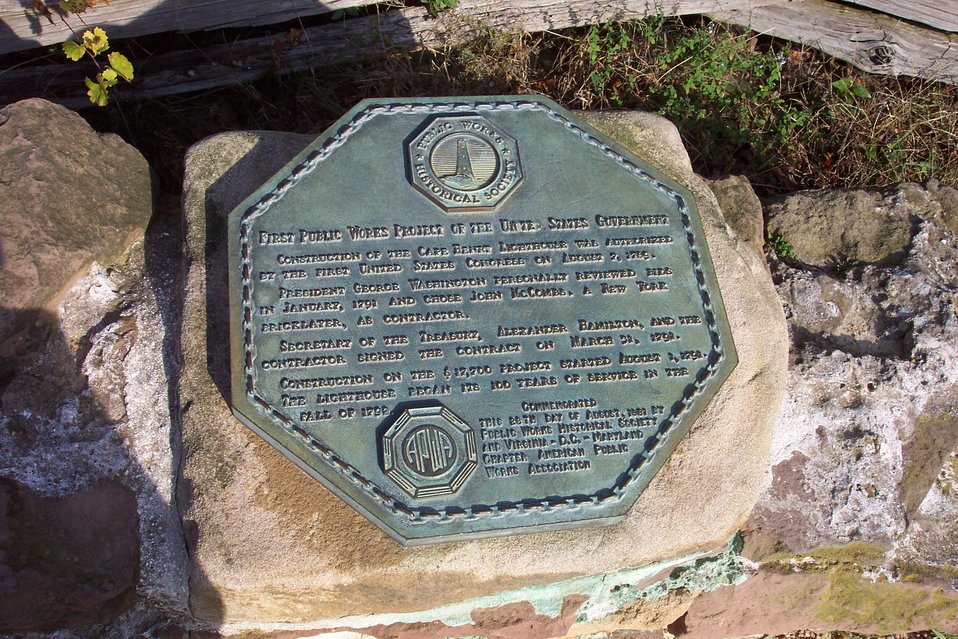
Plaque commemorating Old Cape Henry Lighthouse, the first public works project undertaken by the United States Government in 1791 and was completed in 1792.